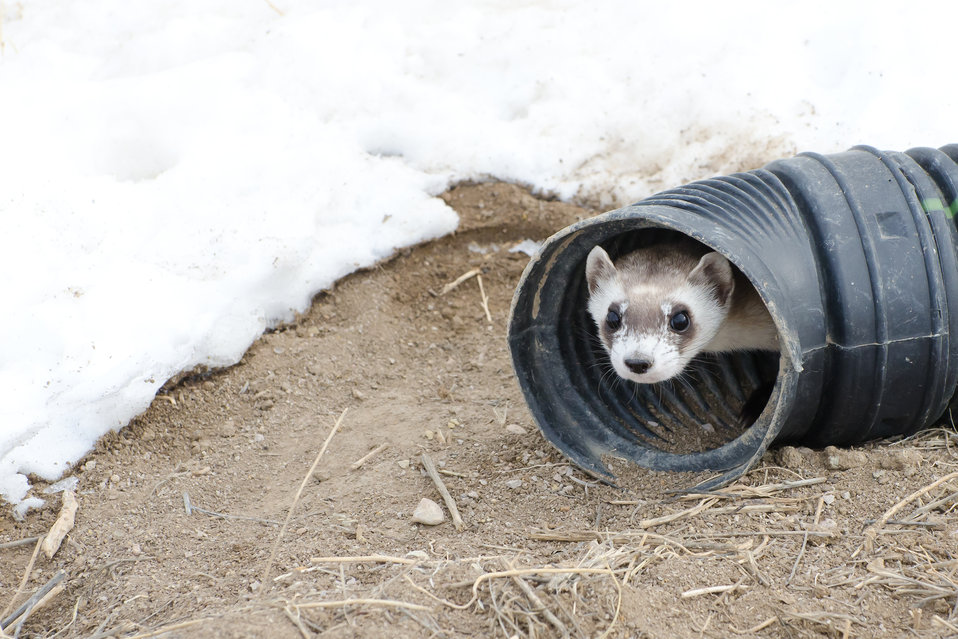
BLACK-FOOTED FERRET IN SNOW

BFF peeking out of above ground tunnel in outside pens at the National Black-footed Ferret Conservation Center in Colorado. Snow in background.